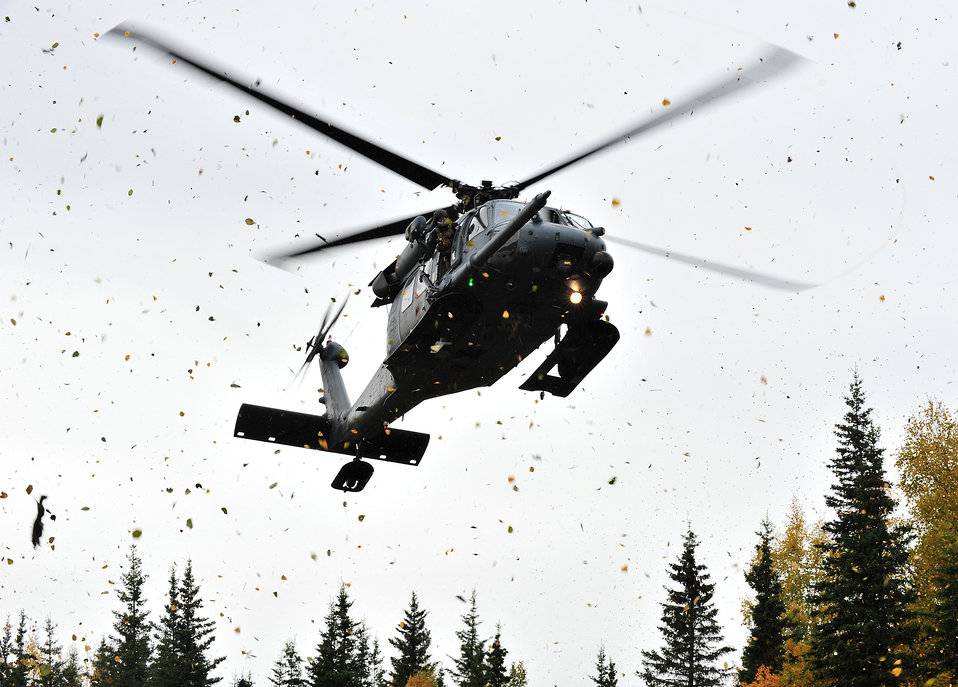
Train like you fight

An HH-60G Pavehawk prepares to land during joint training between 212th Rescue Squadron pararescuemen and members of Baker Company, 3rd Platoon, 509th Infantry Regiment (Airborne) Sept. 21, 2011, at Joint Base Elmendorf-Richardson, Alaska. In this specific training scenario, the pararescuemen used the helicopter to reach members of Baker Company who were hit by an improvised explosive device and under heavy fire.